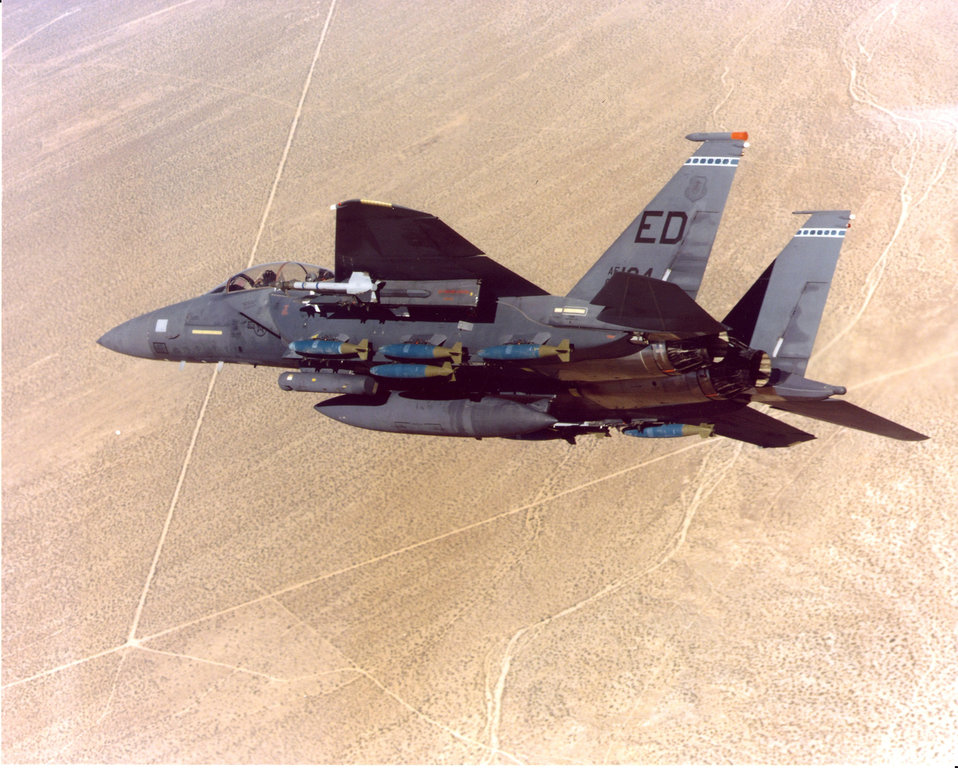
F-15E test and evaluation in the 1980s

The F-15E Strike Eagle underwent development test and evaluation in the late 1980s and was delivered to the combat Air Force in time to play a significant role in the first Persian Gulf conflict.